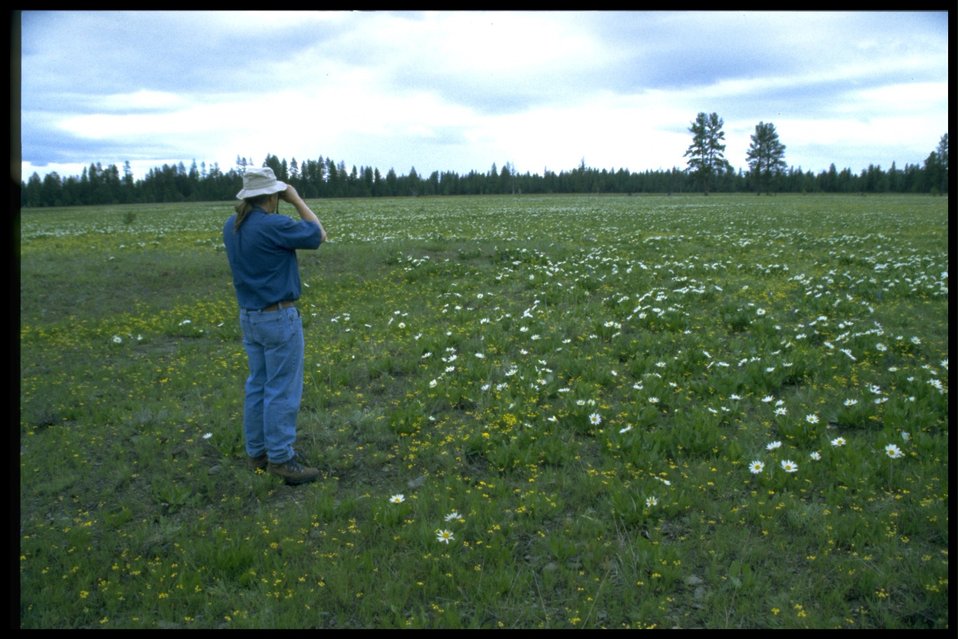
Photographing a field of white-rayed mule's ears (Wyethia helianthodes).